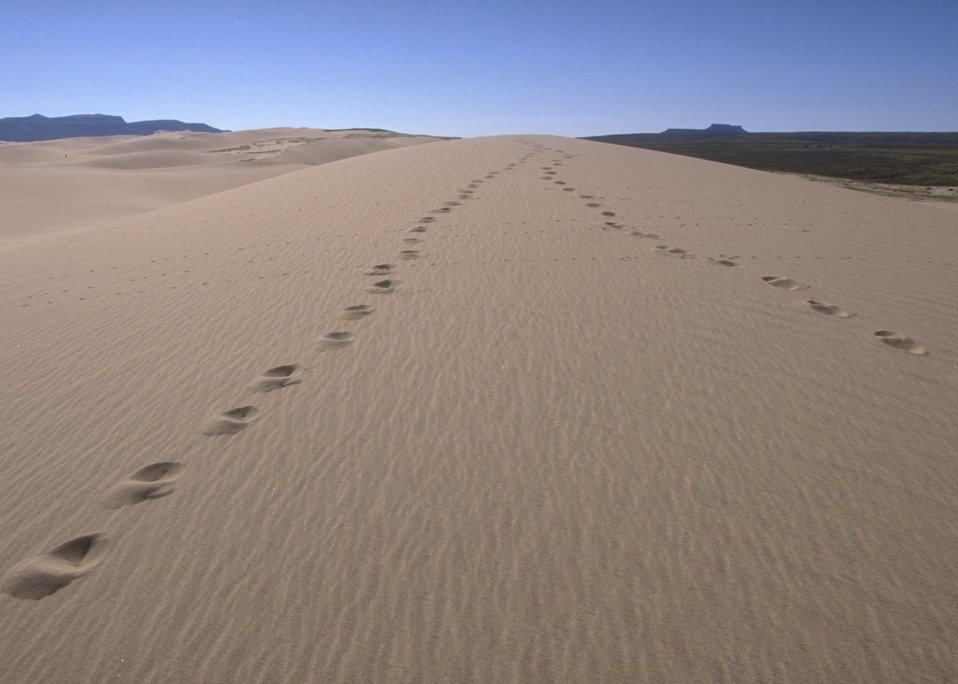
OHV Sand Dunes Area, Rock Springs Field Office.